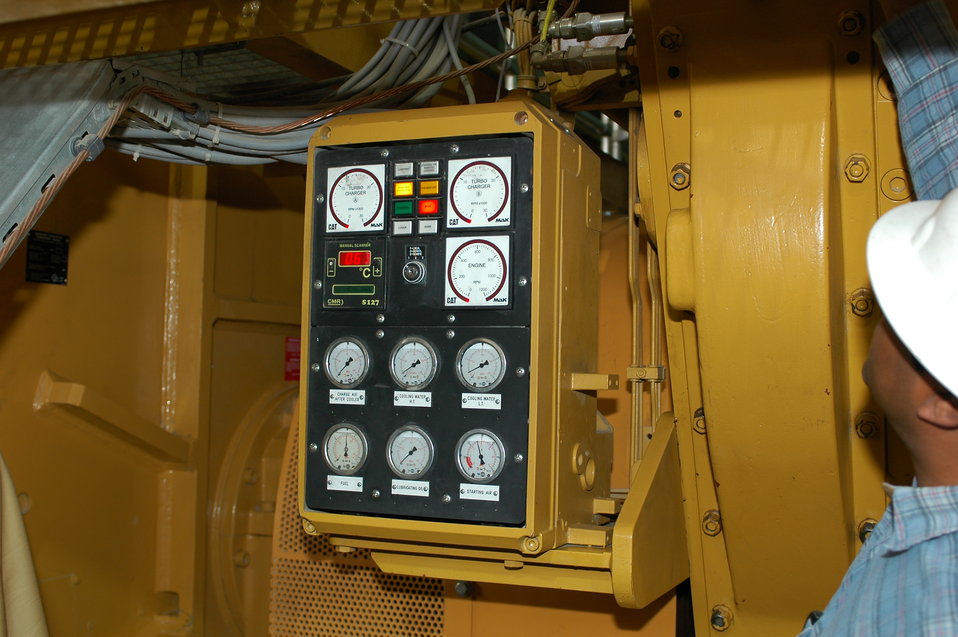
105 MW Tarakhil Power Plant Handover